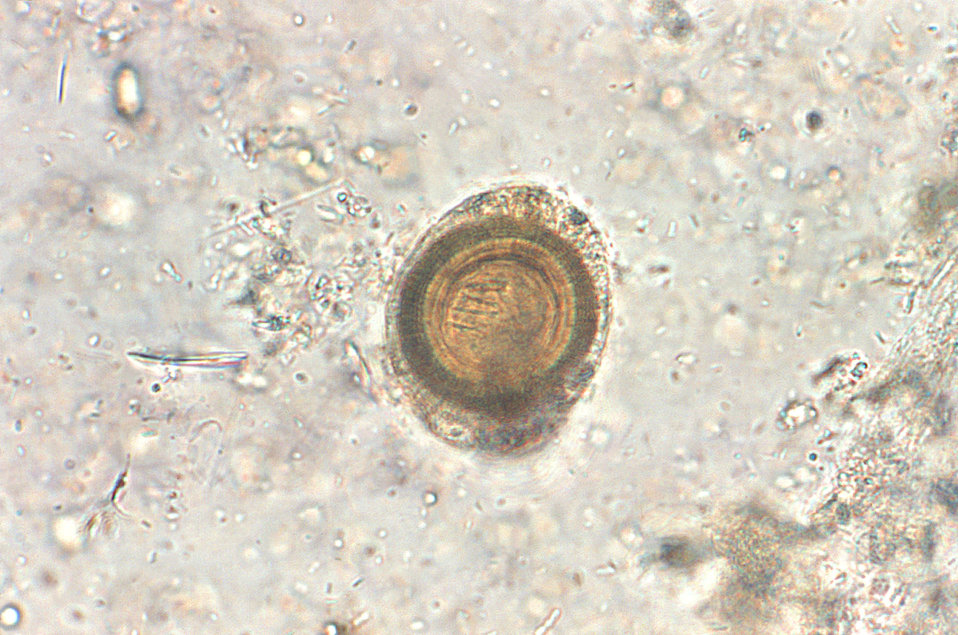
Egg of Taenia sp.